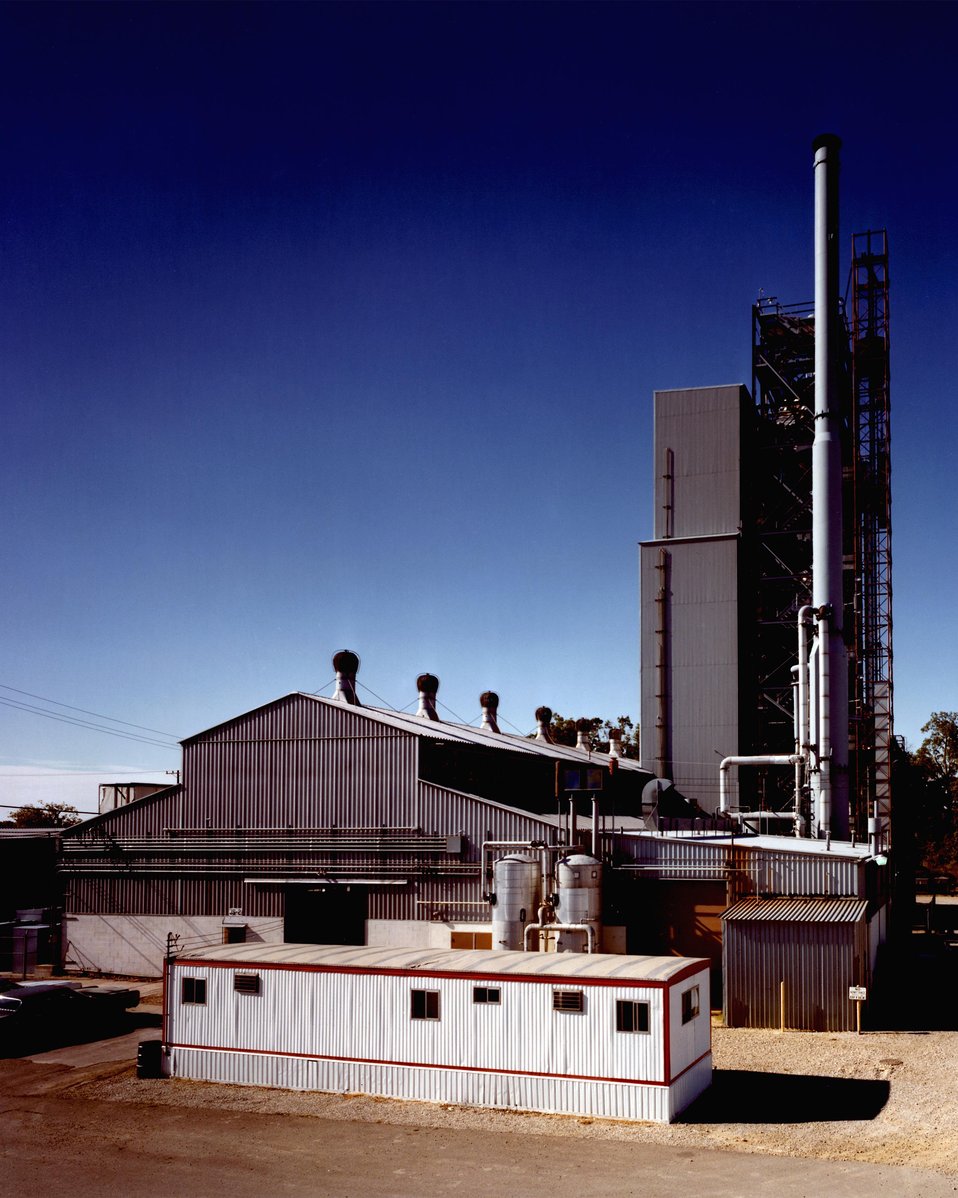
THE BUILDING AT BATTELLE-COLUMBUS WEST HOUSES THE MSFB GASIFICATION PDU.

THE MULTI-SOLID FLUIDIZED-BED GASIFICATION TECHNOLOGY IS A METHOD OF CONVERTING BIOMASS, E.G., WOOD CHIPS, INTO METHANE-RICH GAS THAT COULD BE USED IN PLACE OF NATURAL GAS.THE METHOD USES A CHEMICAL CATALYST IN A REACTOR SYSTEM TO GASIFY BIOMASS. THIS REACTOR IS LESS COMPLEX IN DESIGN THAN A COAL GASIFICATION PROCESS AND ALLOWS THE USE OF SMALLER UNITS.